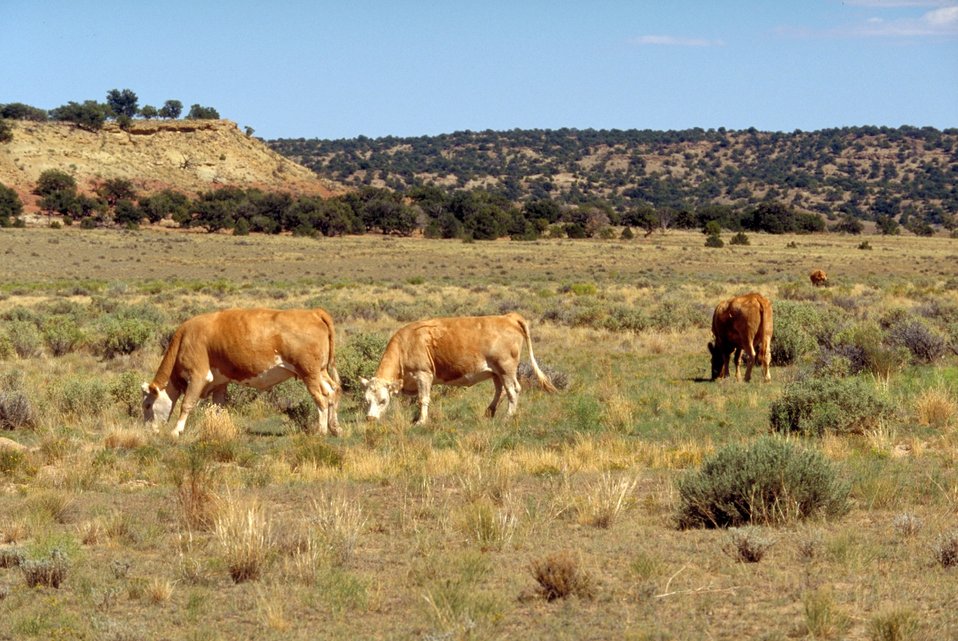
Livestock grazing on the San Rafael Swell.